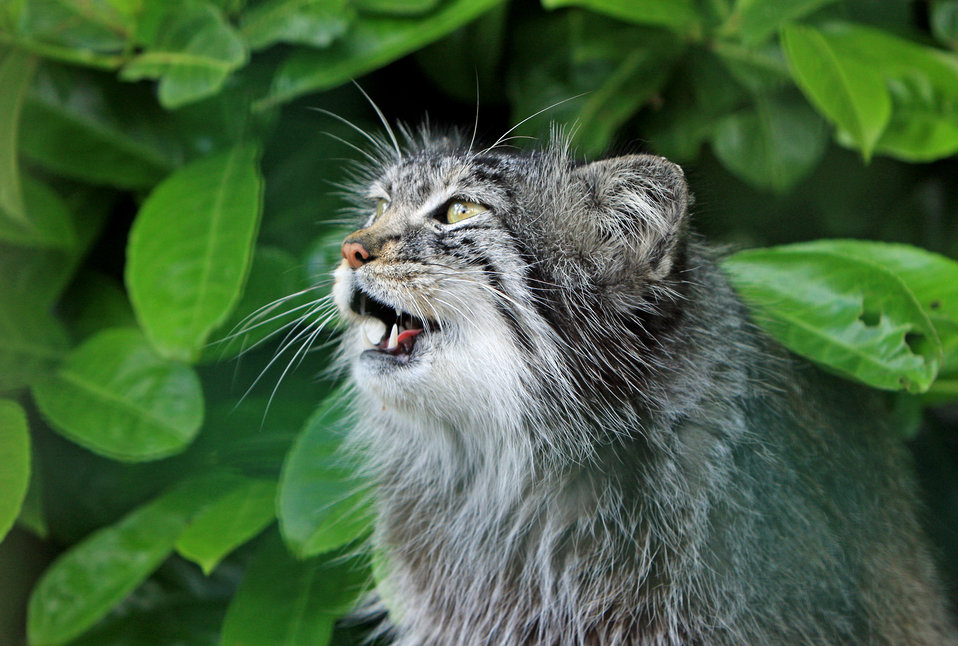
Cat mewing

Cute wild pallas cat mewing in close-up.